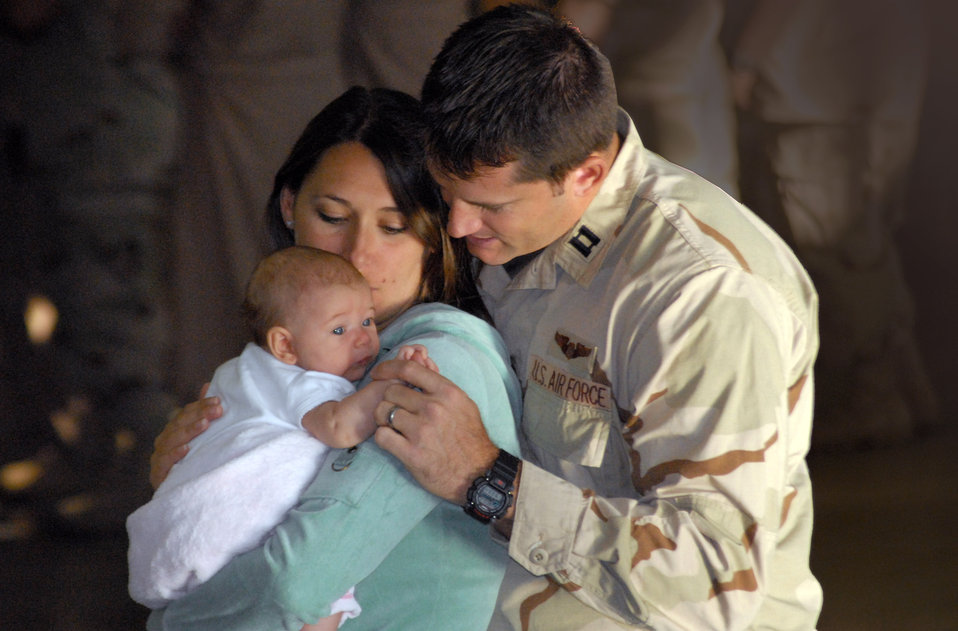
Parting is such sweet sorrow

Capt. Jason Sanderson says goodbye to his wife, Jessica, and 2-month old daughter, Madeline, before leaving from the Green Ramp's Passenger Terminal on a four-month tour to Southwest Asia Oct. 13 at Pope Air Force Base, N.C.